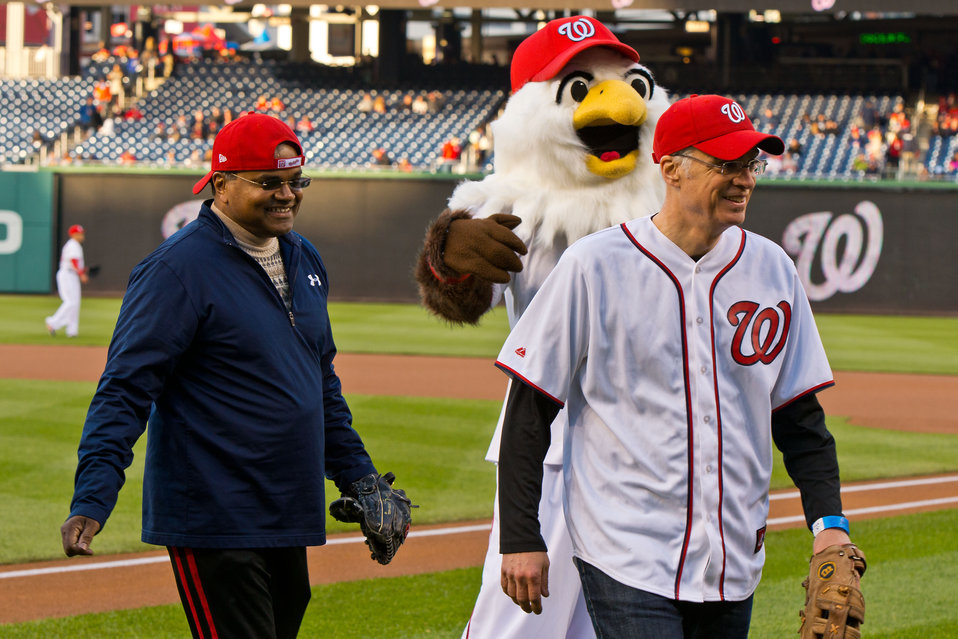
April 22, 2013 – All grins after the first pitch, time to get to work at the recycling kiosk

Acting Administrator Perciasepe and Assistant Administrator Mathy Stanislaus head to the EPA kiosk where fans could find out more about recycling.

Recycling turns materials that would otherwise become trash into valuable resources. Did you know? For every 1 million cell phones recycled, 75 lbs of gold can be recovered.

Learn more about how you can reuse or recycle your electronics.

Keep up with our Acting Administrator @ www.facebook.com/EPAadmin